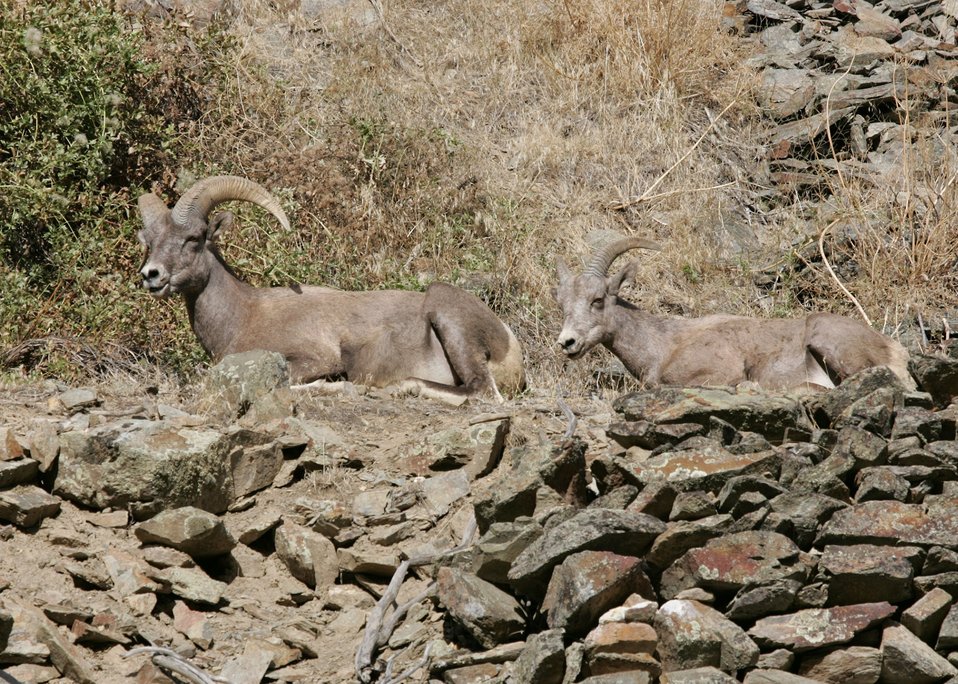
Bighorn sheep in the Connor Creek watershed in eastern Oregon.